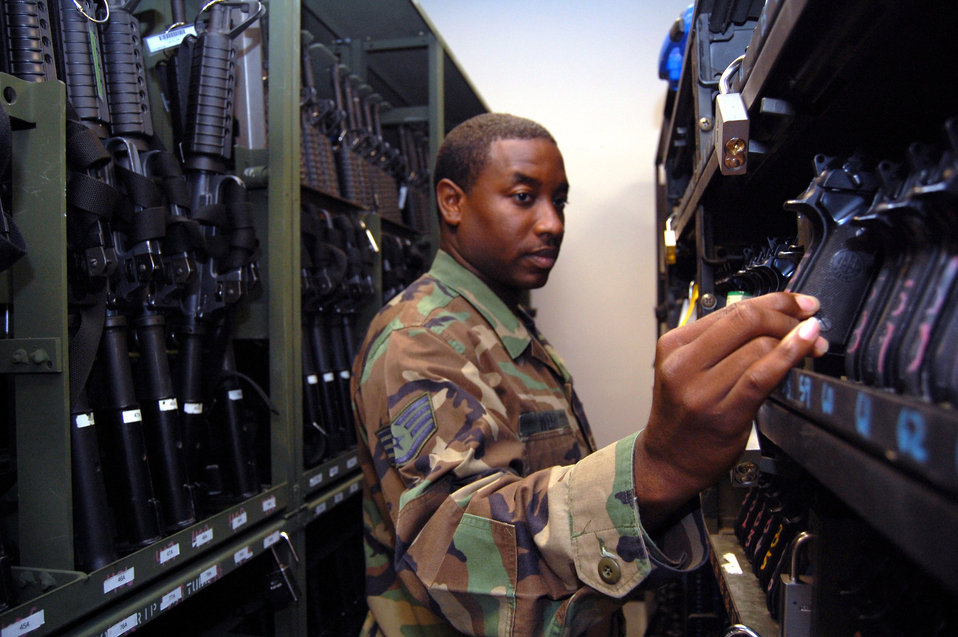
Expeditionary Center armory fires up training for Airmen

Staff Sgt. Raymar Webb reviews the inventory of M-9 pistols while working in the armory Sept. 22 at Fort Dix, N.J. Sergeant Webb is the Air Force Expeditionary Center combat arms instructor. He and three other Airmen manage 48 different weapons systems and 153 different types of foreign weapons in their armory -- the most foreign weapons than any armory in the Air Force. The weapons they care for support more than 7,000 students annually who attend the center's expeditionary courses.